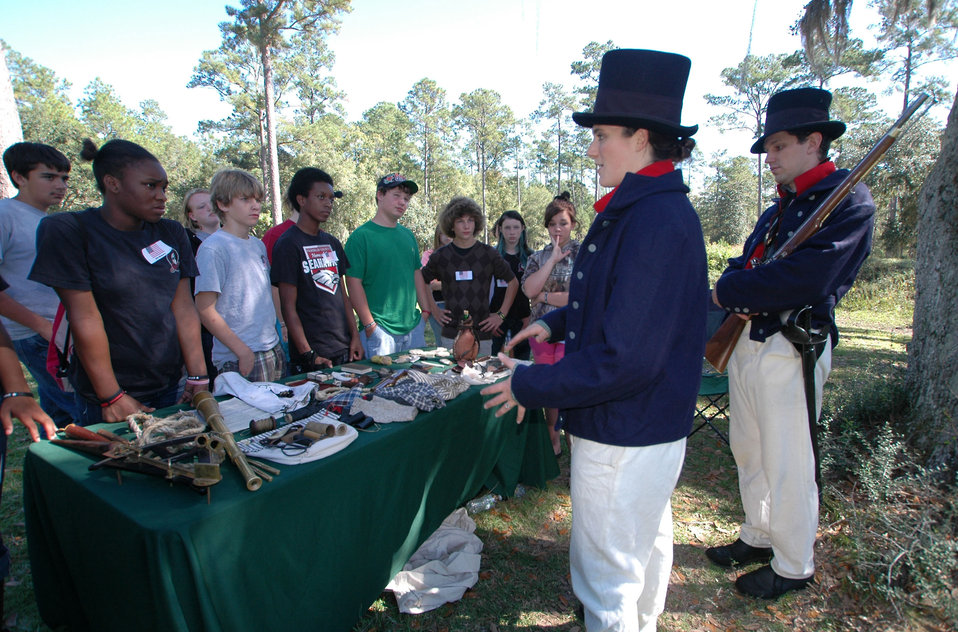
Forest Service teams up with Coast Guard historians

Juliann and Matthew Krogh, members of the Coast Guard Historic Ship’s Company, give a living history presentation to Franklin County, Fla., middle school students recently at historic Fort Gadsden on the Apalachicola National Forest.